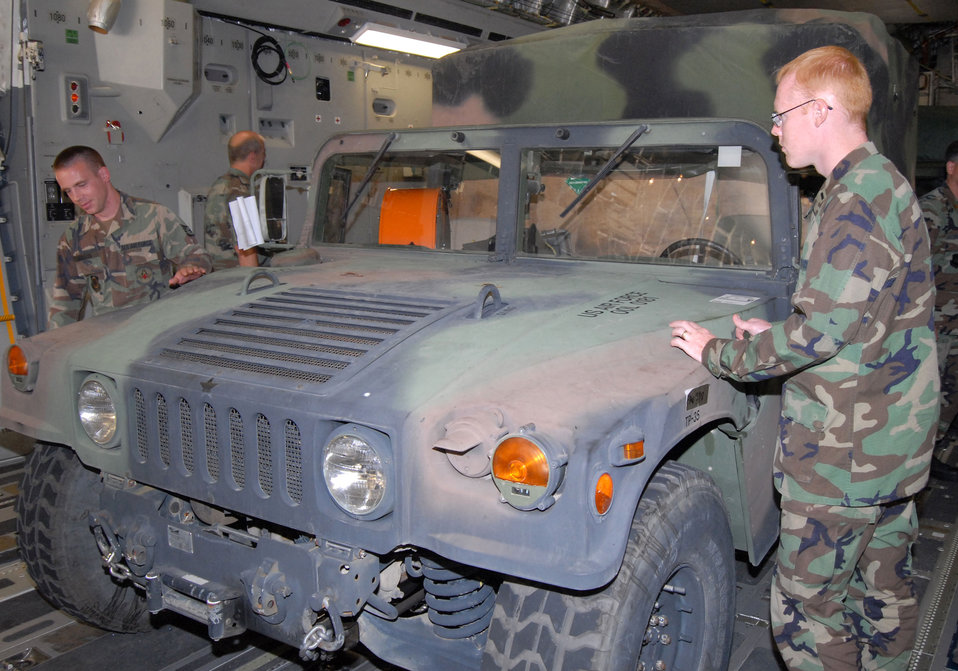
Pope aerovac squadron deploys for Hurricane Dean

Staff Sgt. Phil Benson (left) and 1st Lt.. Joseph Popham check out their vehicle after it was loaded onto a C-17 Globemaster III headed for Brownsville, Texas, Aug. 19 at Pope Air Force Base, N.C. The Airmen are members of Pope AFB's 43rd Aeromedical Evacuation Squadron who deployed to prepare for Hurricane Dean relief efforts.